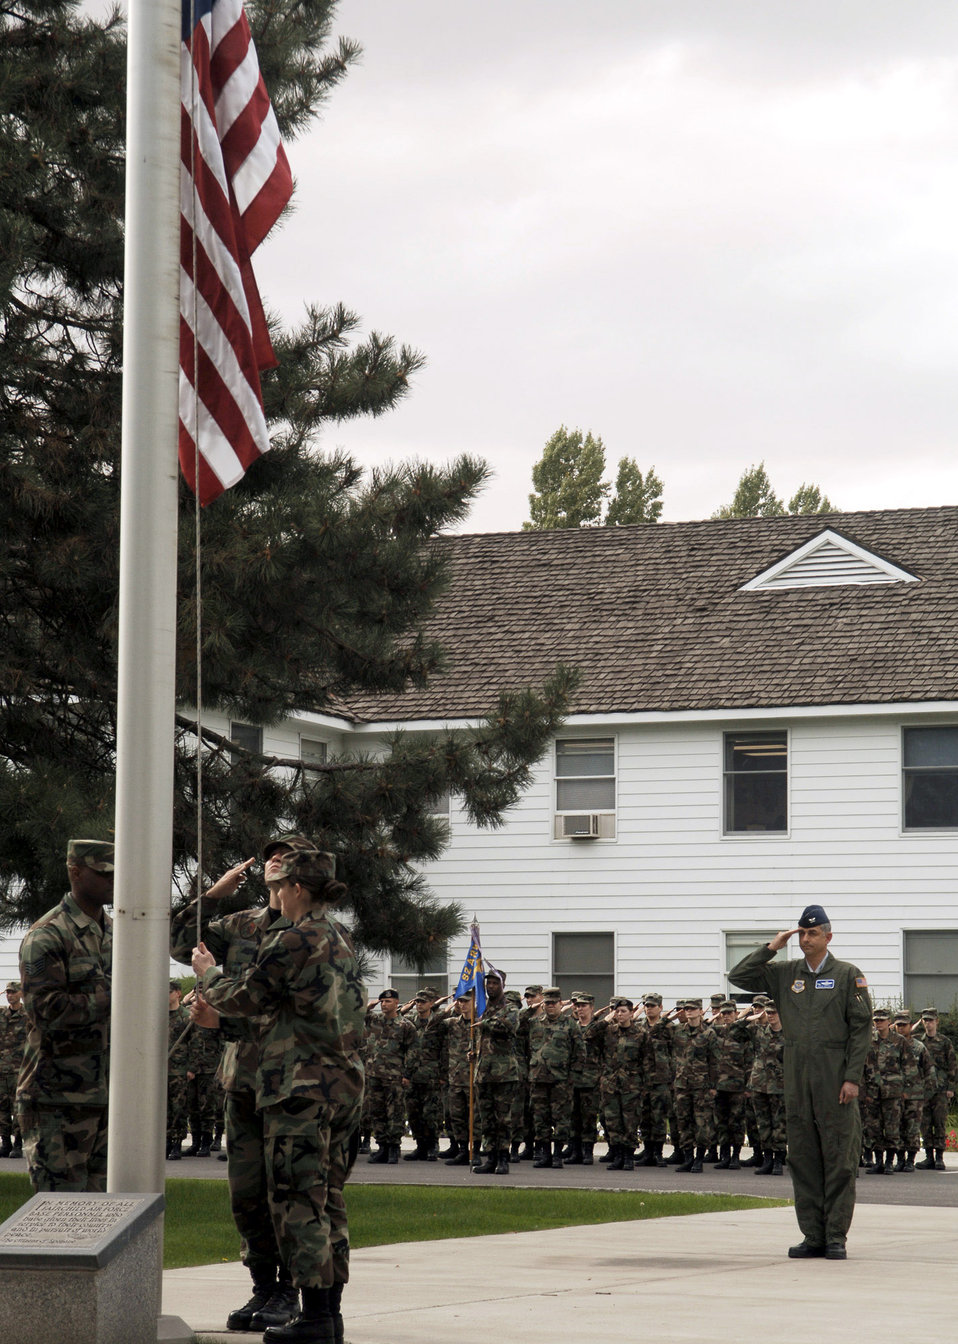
Fairchild celebrates Air Force's 60th

Members of the honor guard lower the American flag during the playing of the national anthem as Col. Roger Watkins salutes Sept. 18 at Fairchild Air Force Base, Wash. Representatives from the operations, maintenance, mission support and medical groups were present to commemorate the Air Force's 60th birthday. Colonel Watkins is the 92nd Air Refueling Wing vice commander.